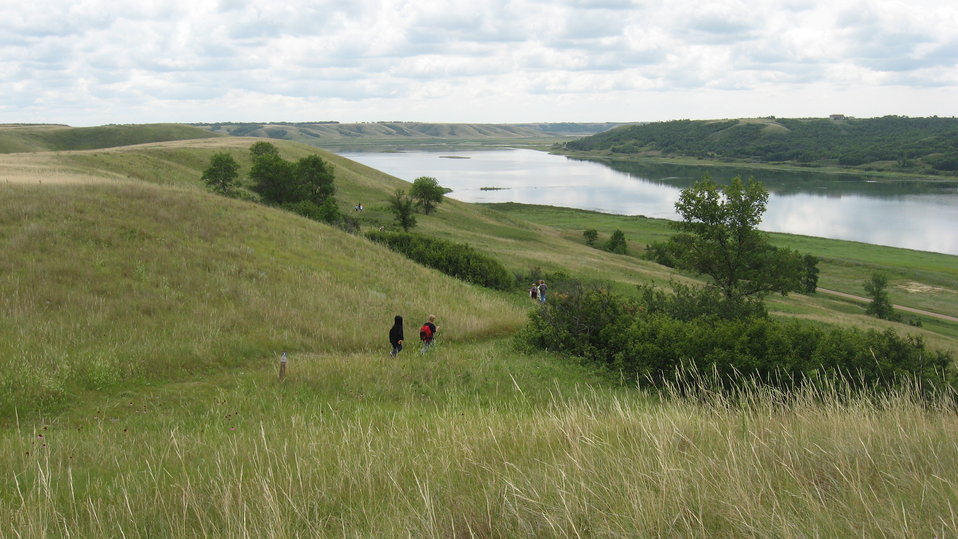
Group Hiking

Hikers on Munch's Coulee National Hiking Trail in Des Lacs National Wildlife Refuge in North Dakota.